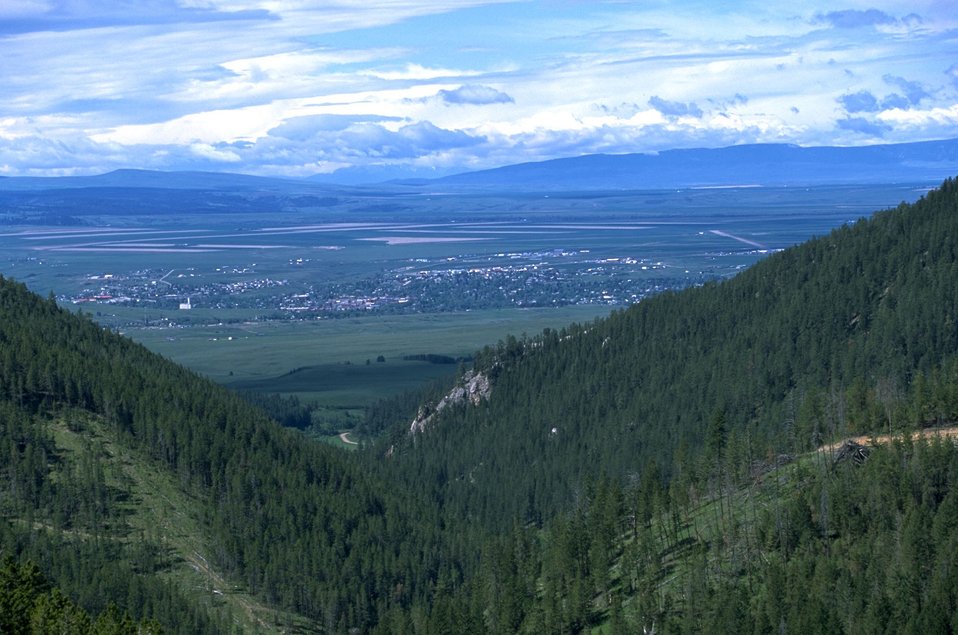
Looking down on Lewistown MT near the Judith Mountains